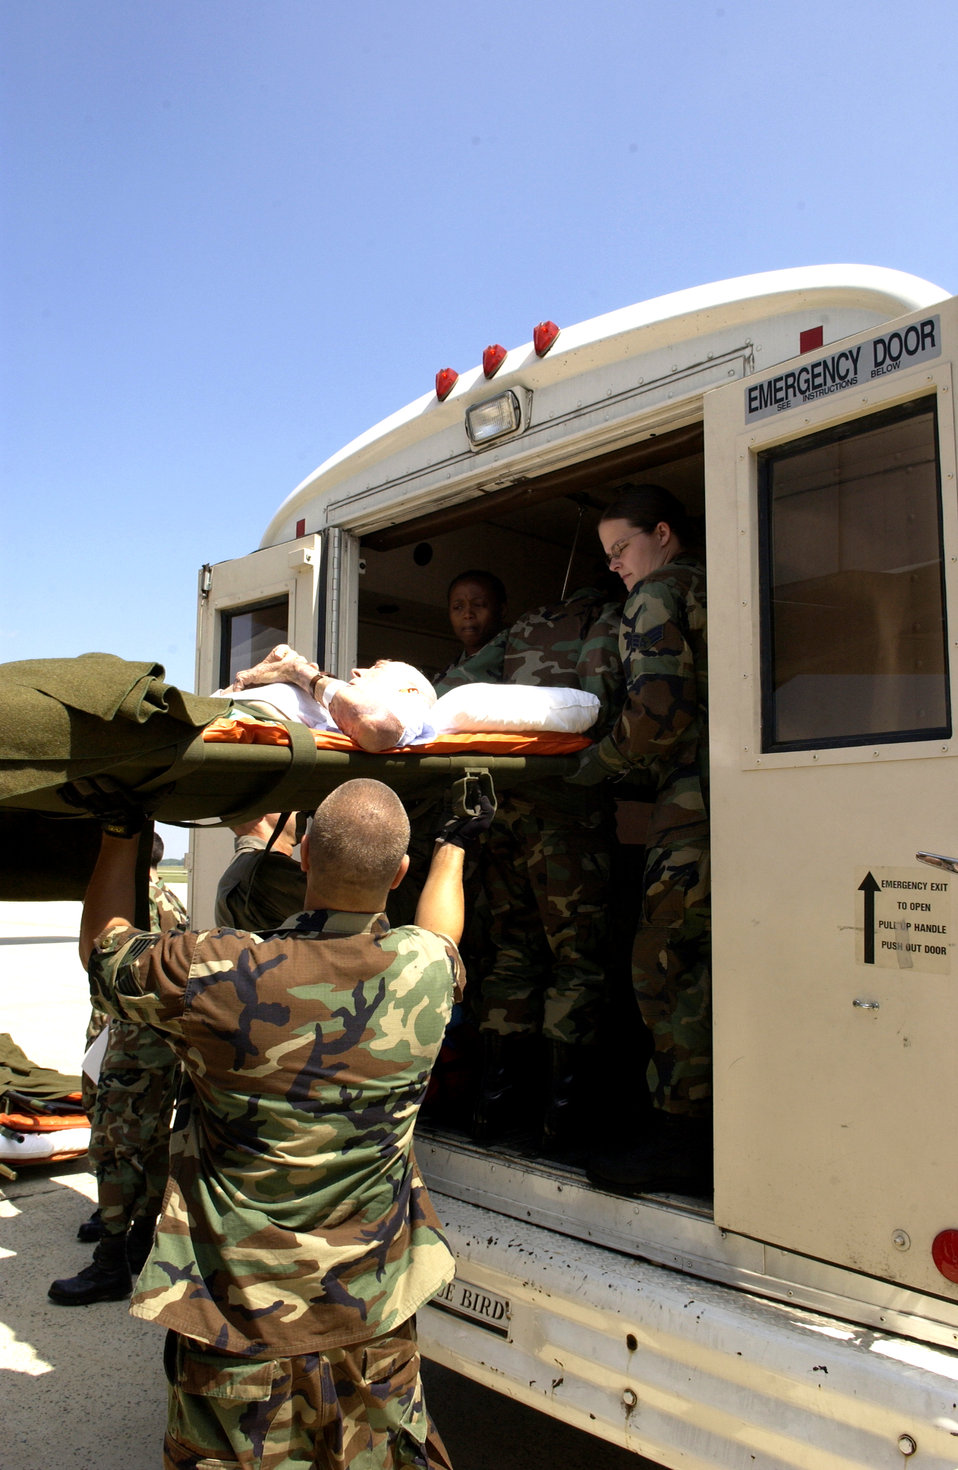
Evacuation

ANDREWS AIR FORCE BASE, Md. - A veteran from the Armed Forces Home in Gulfport, Miss., is lifted onto a bus here after Airmen with the 908th Airlift Wing at Maxwell Air Force Base, Ala., the 375th Aeromedical Evacuation Squadron at Scott AFB, Ill., and the 89th Medical Group here helped transport veterans from the Armed Forces Home after Hurricane Katrina decimated the area. The veterans were flown by a C-130 Hercules from Maxwell to here where they were then taken to the Armed Forces Home in Washington, D.C.